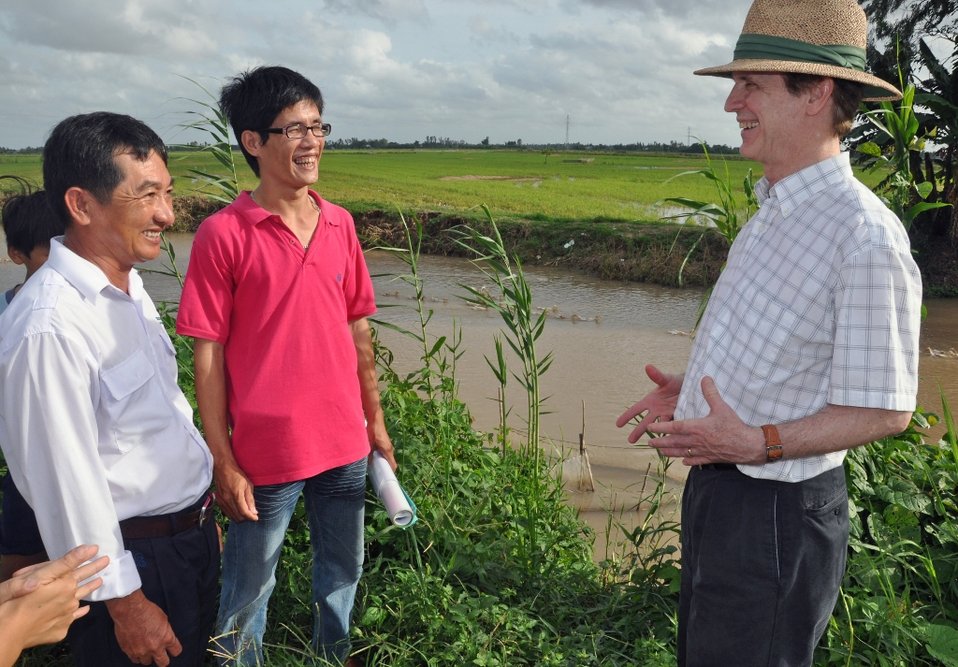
USAID helps local authorities combat bird flu from rural communities to markets throughout Vietnam

USAID Mission Director Francis Donovan meets with authorities and local duck farmers in Vietnam's southern Can Tho Province.